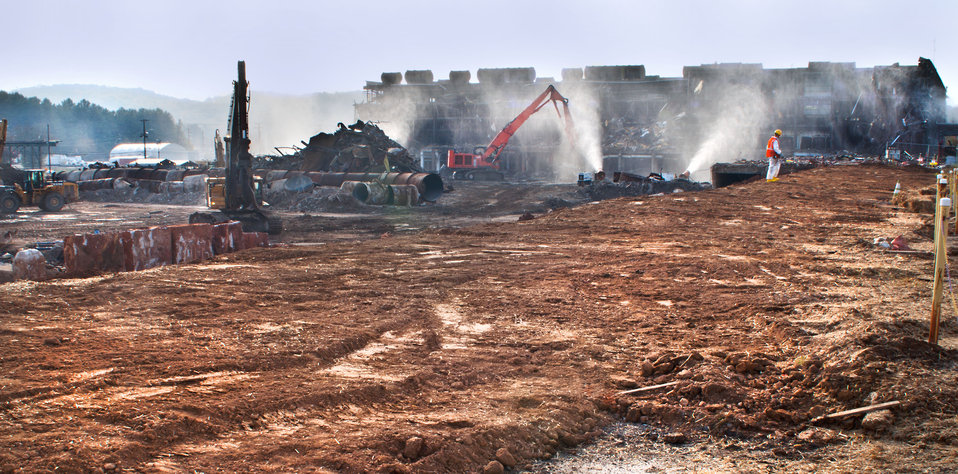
D and D Clean Up Work at K-25 Oak Ridge 2013

13-124-028 DOE photo Lynn Freeny 10-30-2013 Oak Ridge Tennessee